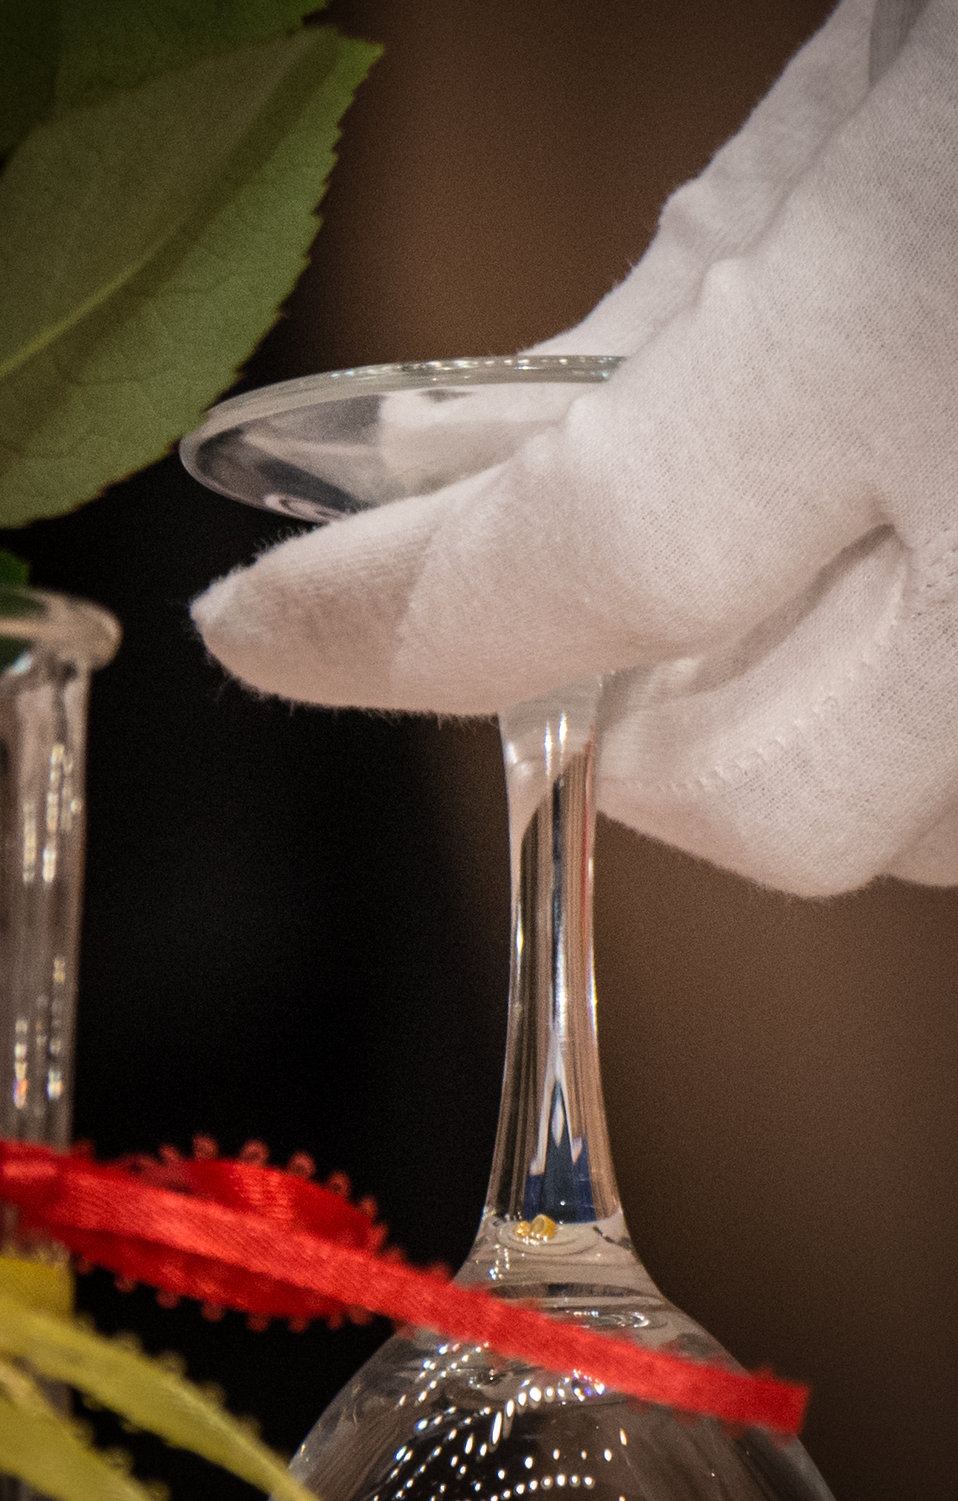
The POW/MIA Missing In ActionTable and Honors Ceremony, reminds us that the glass is inverted to symbolize their inability to share this day's toast, during the 2013 U.S. Department of Agriculture (USDA) Veterans’ Day Observance, whose theme is “VALOR, COURAGE, SACRIFICE – HONORING ALL WHO SERVED,” in Washington, DC, on Wednesday, November 20, 2013.